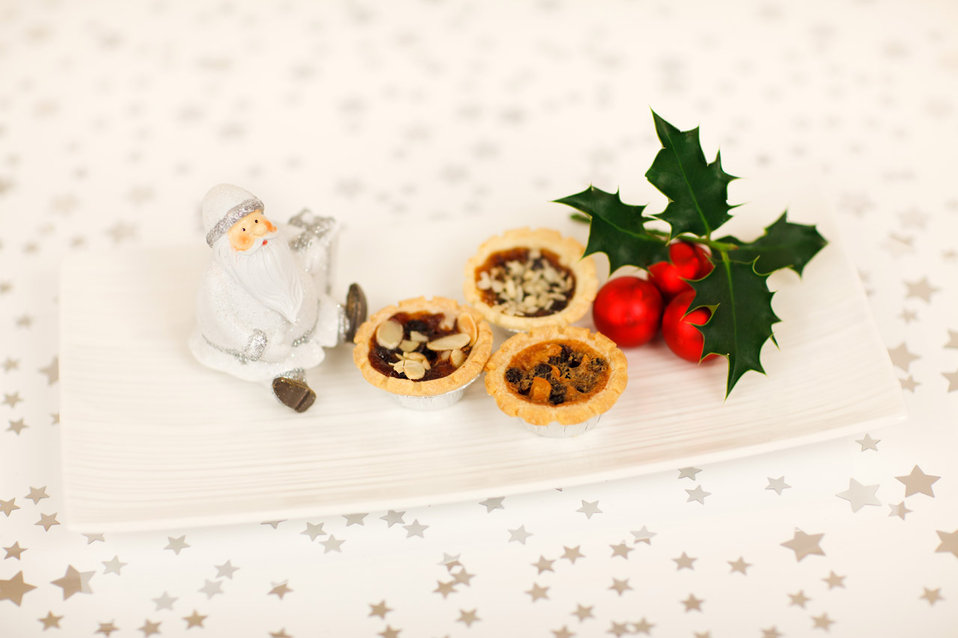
Christmas decoration and santa

Santa claus, mince pies and holly on a plate on starry background.